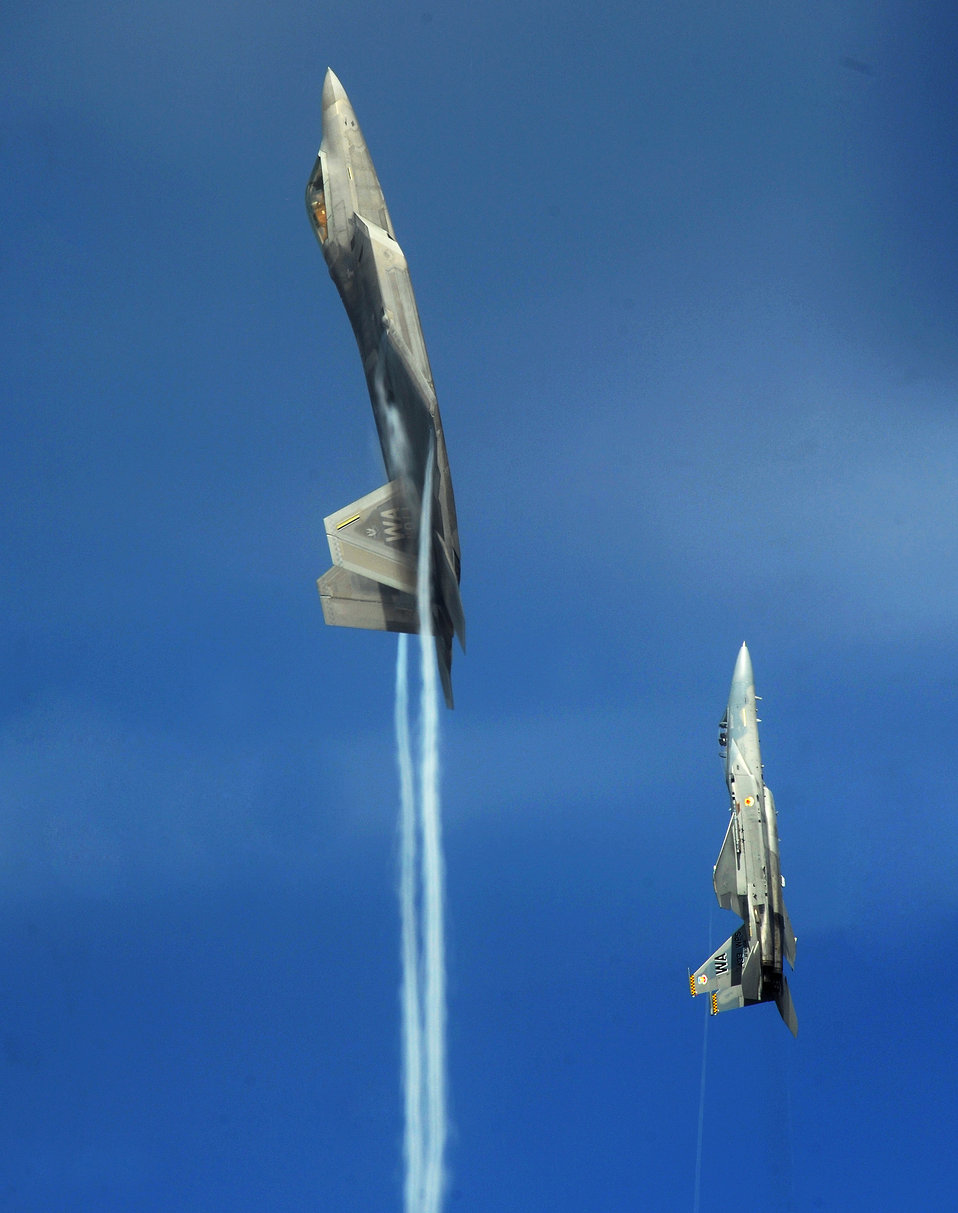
Up, up and away

An F-22 Raptor and F-15 Eagle from the U.S. Air Force Weapons School's 433rd Weapons Squadron pull into a vertical climb over the Nevada Test and Training Range July 16, 2010.